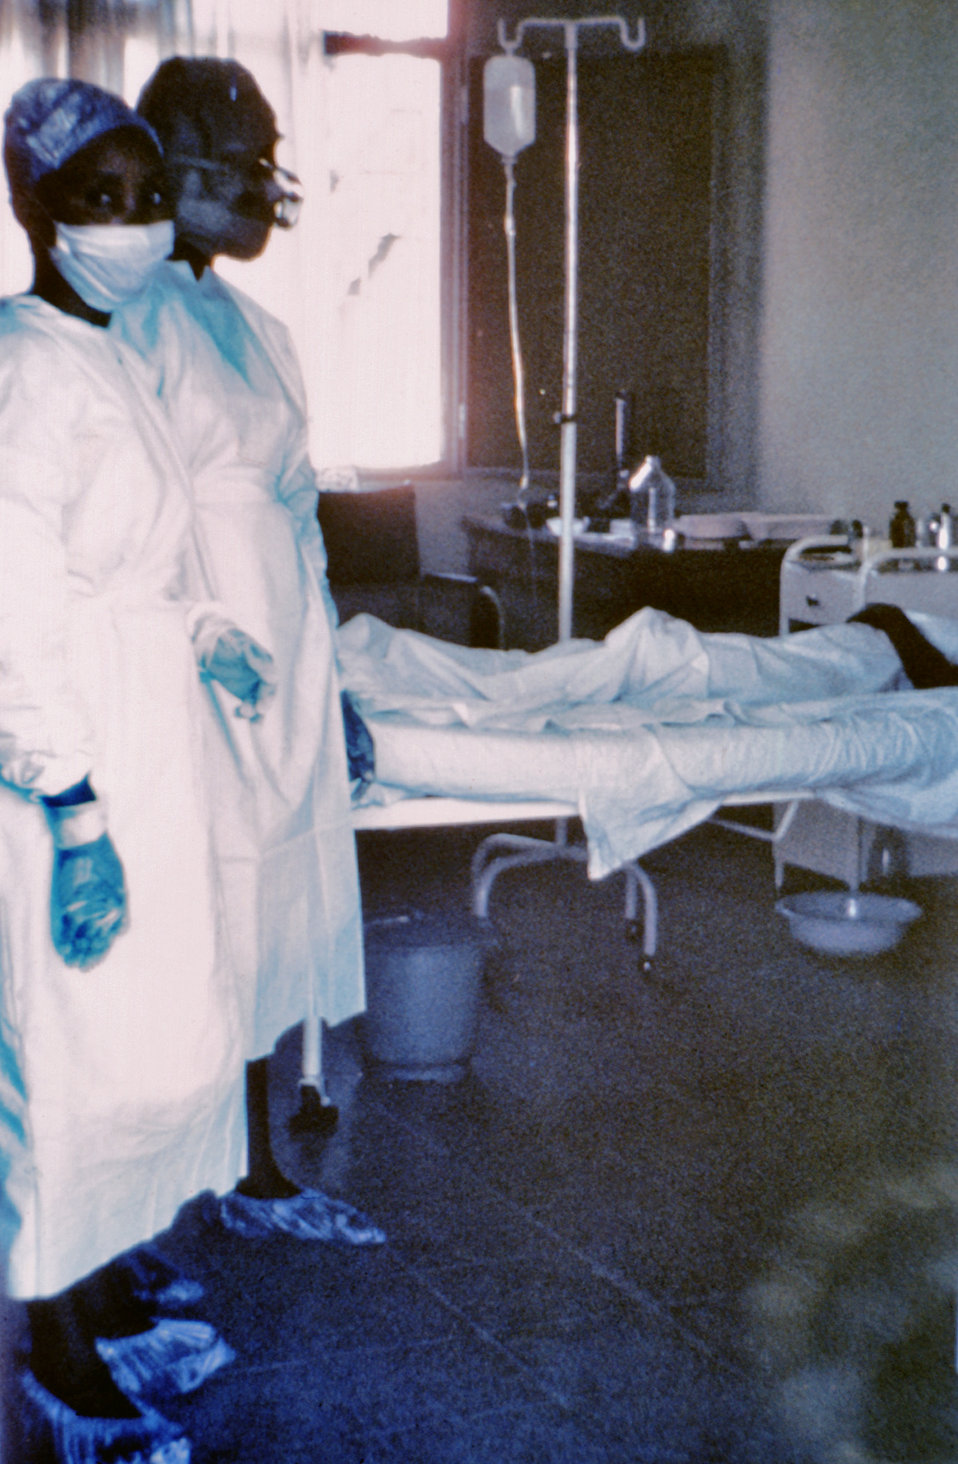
This 1976 photograph shows two nurses standing in front of Ebola case #3, who was treated, and later died at Ngaliema Hospital, in Kinshasa, Zaire.